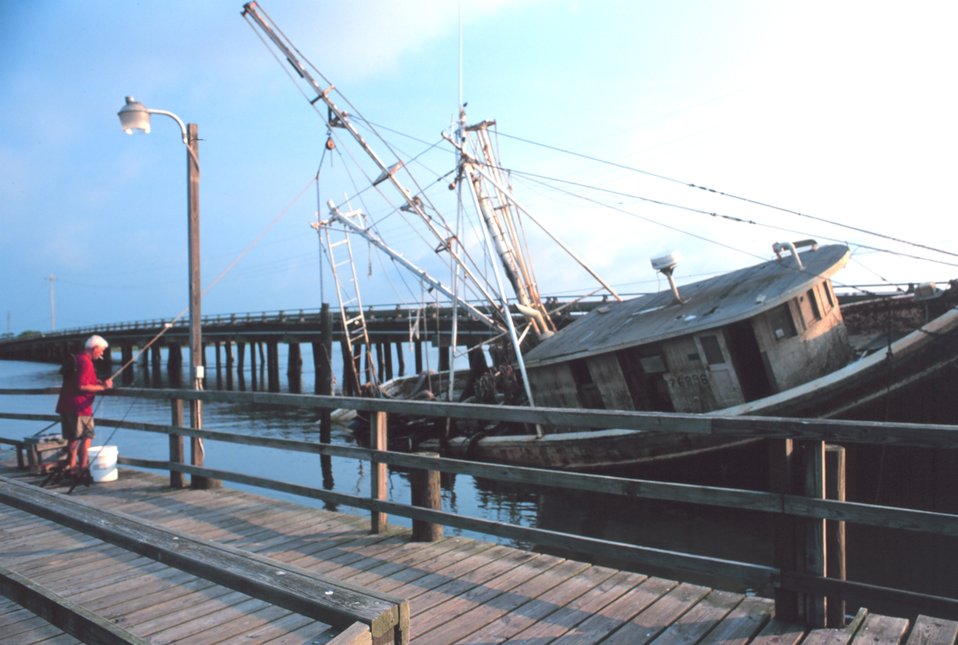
They say that fish congregate around wrecks - a fisherman trying his luck next to a floating wreck.